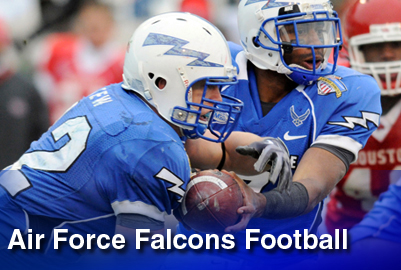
Academy Football